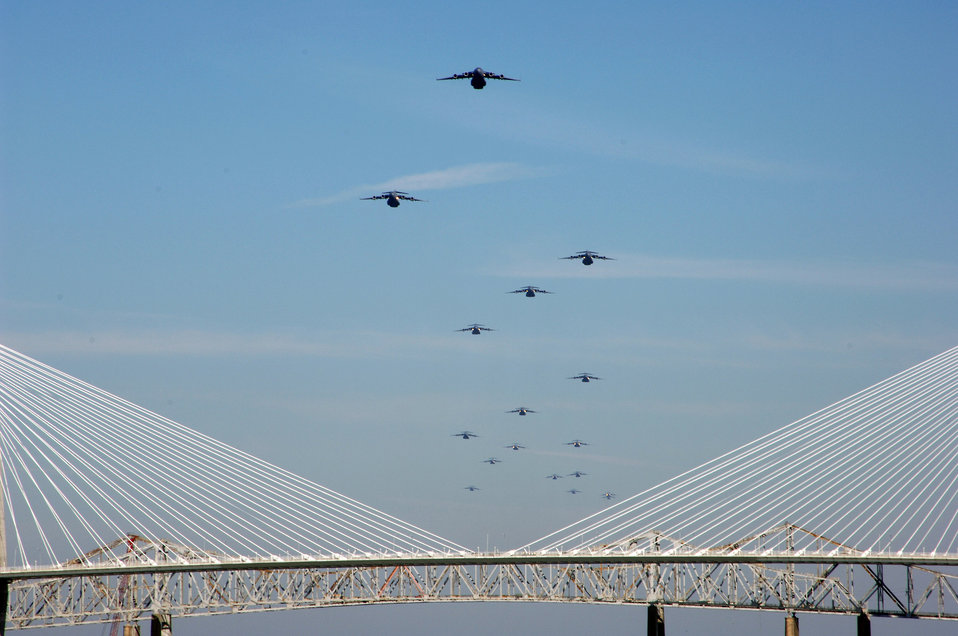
AF Budget

CHARLESTON, S.C. (AFPN) -- A formation of 17 C-17 Globemaster IIIs fly in formation. This year's $1.3 billion military construction request, as part of the president's fiscal year 2007 budget plan, is the largest in the last 15 years and includes projects for new mission beddowns for the C-17 Globemaster III. The flight demonstrates the U.S. Air Force's strategic capability and is the largest formation of C-17s to take flight from a single base. The C-17s are assigned to the 437th and 315th Airlift Wings at Charleston Air Force Base.